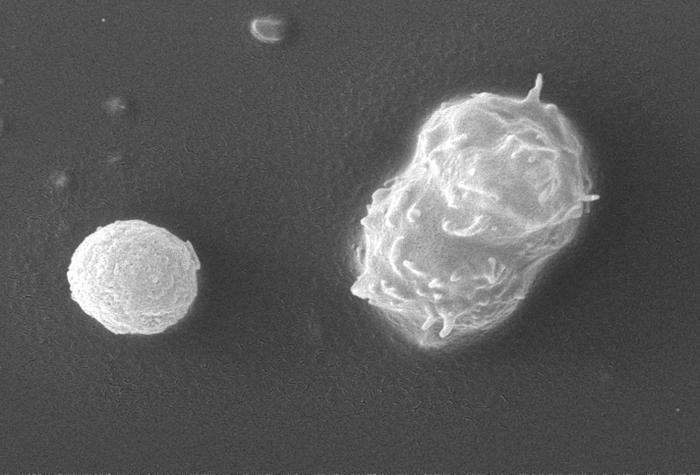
This scanning electron micrograph (SEM) revealed some of the ultrastructural features seen on the surface of a number of Acanthamoeba polyphaga protozoa. Note the amorphous nature of the organisms' exterior from which pseudopodia, from the Latin pseudo = false, and podia = feet, can extend. These pseudopodia enable the amoeba to move about, and grasp objects in its environment.